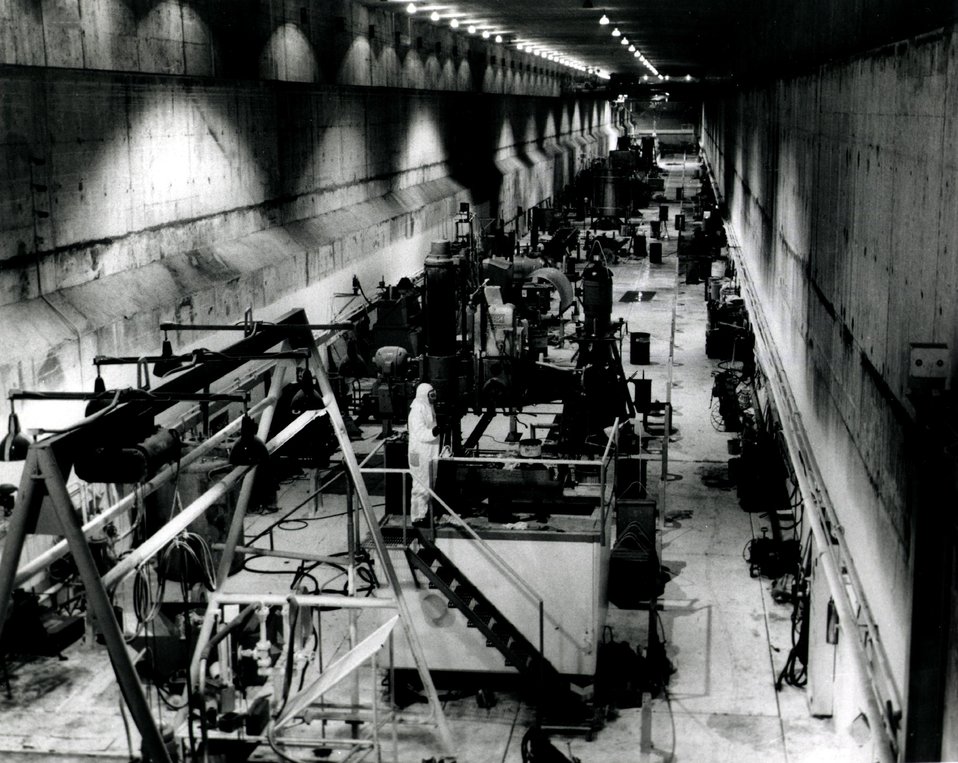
Valuable processing equipment worth millions of dollars has been reclaimed and returned to service after decontamination in this Hanford facility. This is the interior of the old T-Plant separation building. Circa 1966.